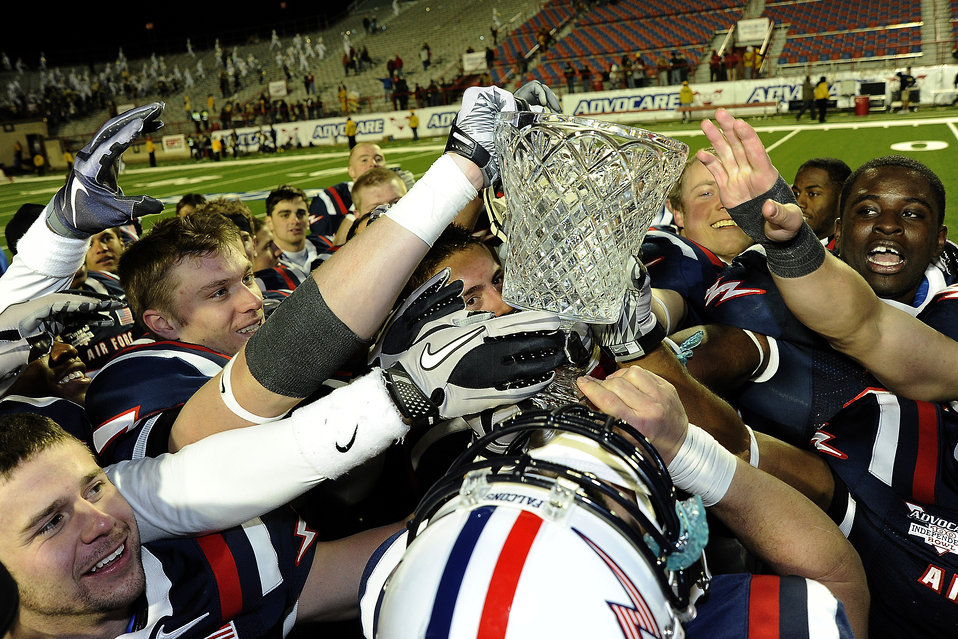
Falcons ground Yellow Jackets

The U.S. Air Force Academy Falcons celebrate their victory after defeating Georgia Tech at the Advocare V100 Independence Bowl Dec. 27, 2010, in Shreveport, La. The final score was 14-7.